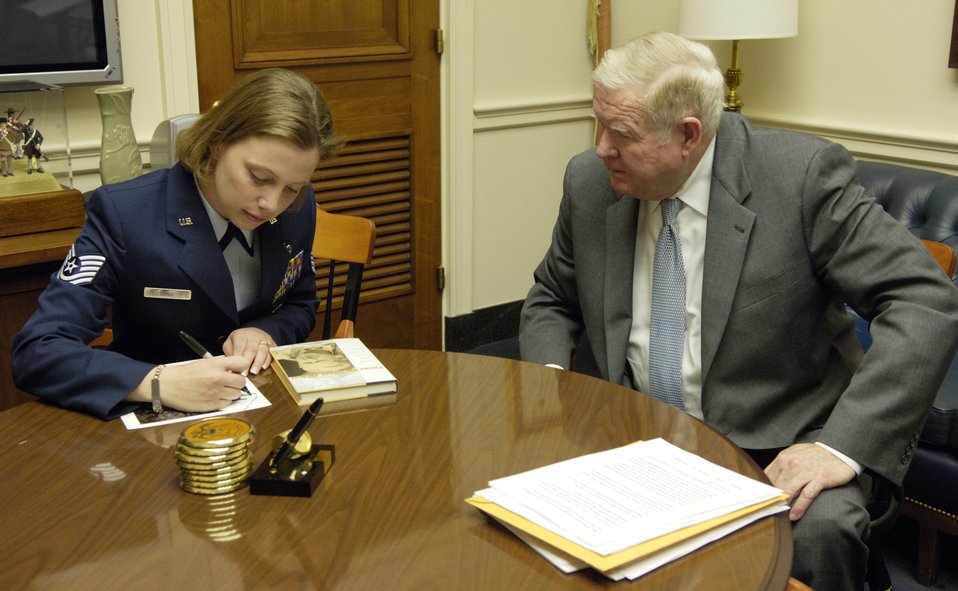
Rex the dog comes to DC

WASHINGTON (AFPN) -- Rep. John Murtha (right) looks on in his Capitol Hill office as Air Force security forces specialist Tech. Sgt. Jamie Dana signs a picture of her and Rex, a retired military working dog, taken during Rex's adoption ceremony. Representative Murtha was instrumental in pushing through legislation which allowed Sergeant Dana to adopt Rex following their recovery from injuries they sustained while deployed to Iraq. Sergeant Dana, who is stationed at Peterson Air Force Base, Colo., and Rex were here to attend the State of the Union address. They wanted to thank the lawmakers who made it possible for the two to stay together as a team.